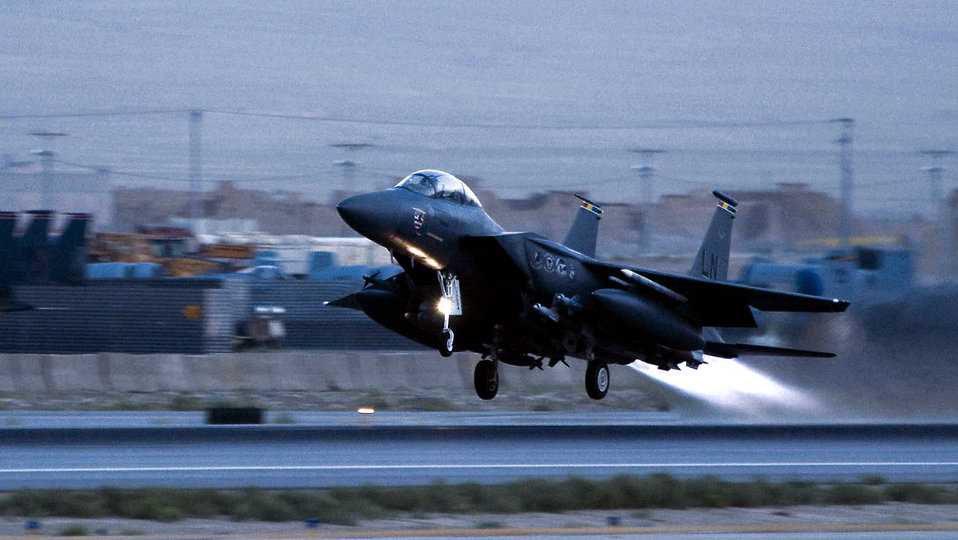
Oct. 30 airpower summary: F-15Es keep vigilant overwatch

An F-15E Strike Eagle takes off from a Southwest Asia air base. The F-15E is a dual-role fighter designed to perform air-to-air and air-to-ground missions.